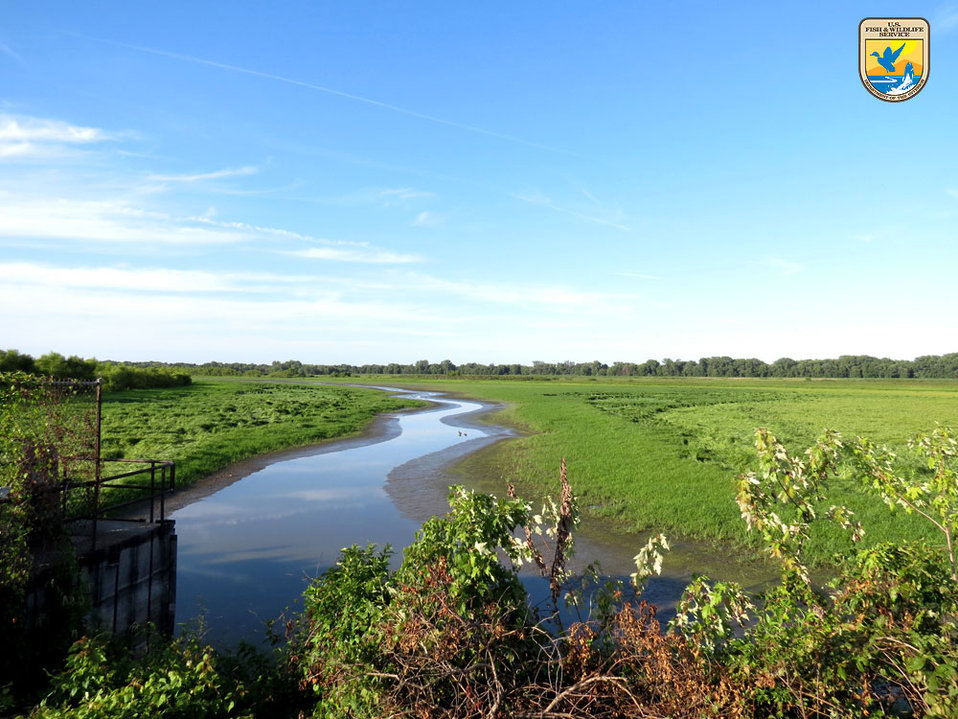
Moist Soil Plants